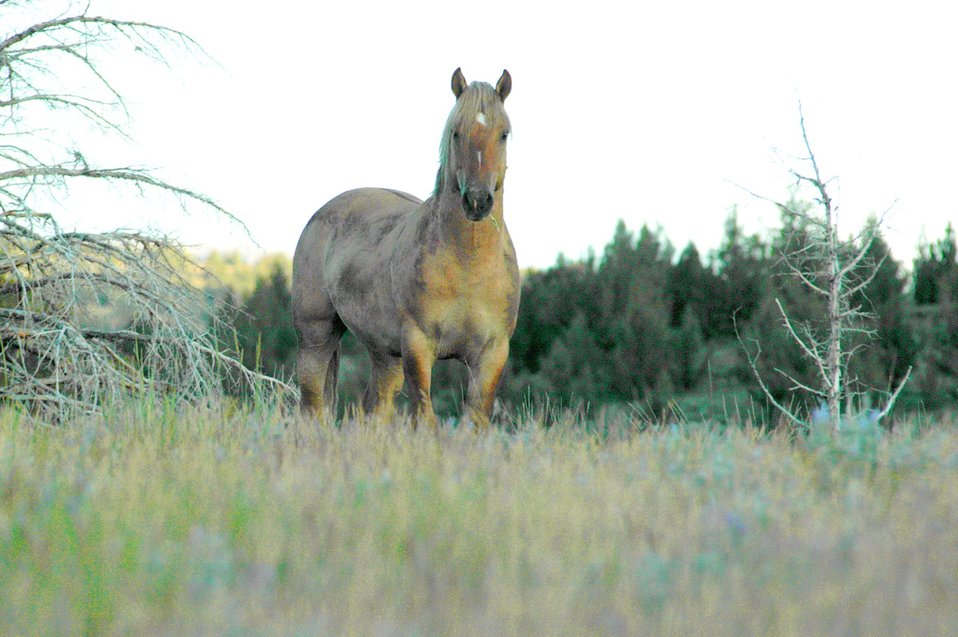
Kiger horses roam the plateaus of the Kiger Wildhorse Herd Management Area near Steens Mountain in Southeastern Oregon.